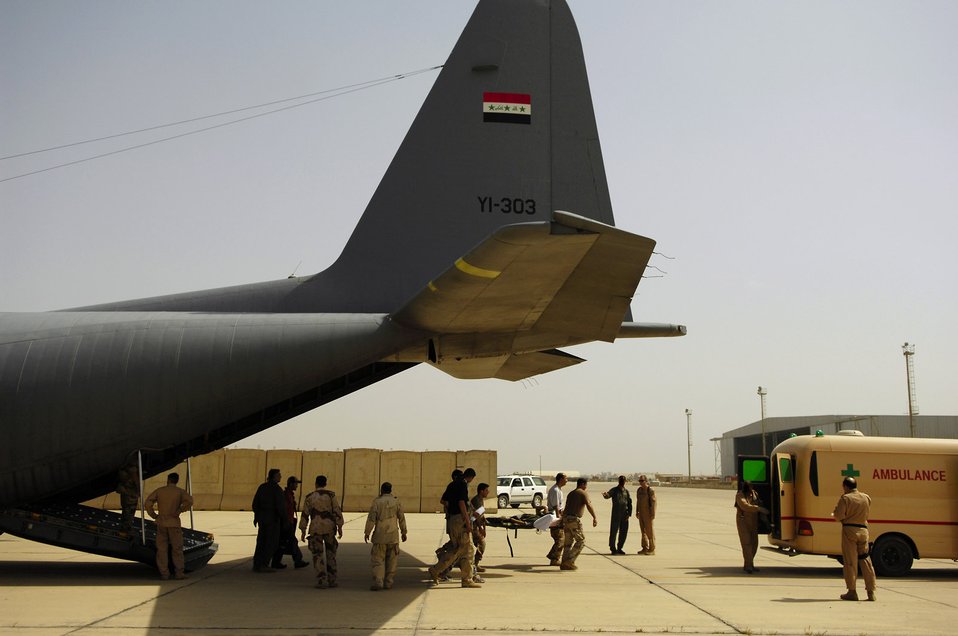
Iraqi air force in the fight

Members of the Iraqi air force unload a wounded Iraqi army soldier from an Iraqi air force C-130 Hercules after a March 30 flight from Basra, Iraq, to New Al Muthana Air Base, Iraq. All processing, loading and transporting of the Iraqi troops is being conducted by the Iraqi air force.